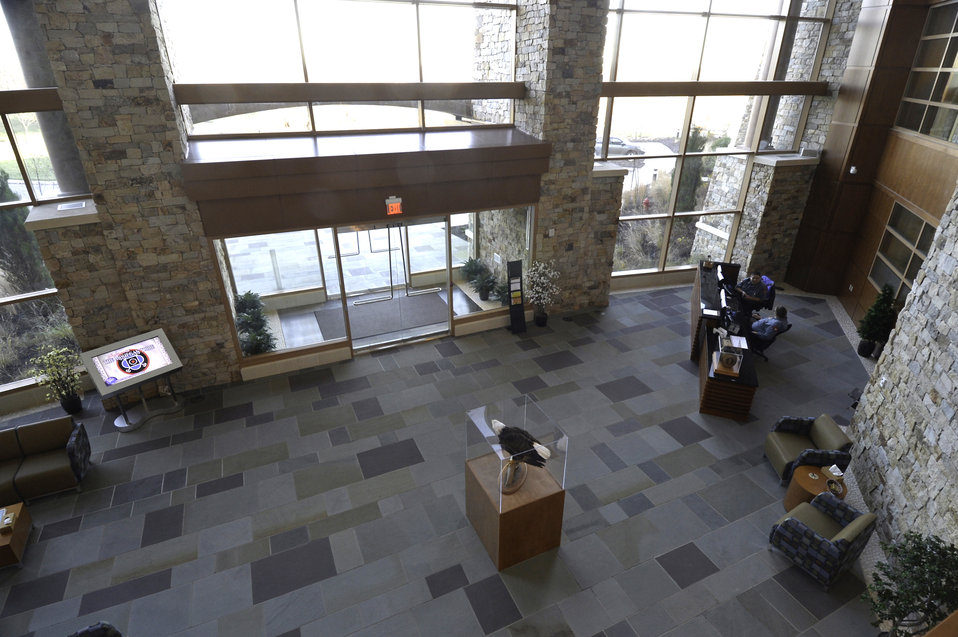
Looking down on the atrium entrance to the Mohegan Tribe Community Center and Government Building in Uncasville, CT on Nov. 19, 2013. A U.S. Department of Agriculture (USDA) Rural Development (RD) Community Facility Loan was provided to the Mohegan Tribe for the construction of the Mohegan Tribe Community Center and Government Building in Uncasville, CT. USDA’s RD Community Facilities Programs makes and guarantees loans to develop essential community facilities in rural areas and towns of up to 20,000 in population. Loans and guarantees are available to public entities such as municipalities, counties, parishes, boroughs, and special-purpose districts, as well as to non-profit corporations and tribal governments. The 160,000 square foot building Center hosts an exhibit celebrating federal recognition, history of Mohegan Chiefs, a new Library and Archives space, new Arts and Crafts room, a new gymnasium, and a new community room to enjoy food and family. The Center will continue the Tribe’s plan for growth and meeting the needs of its members.